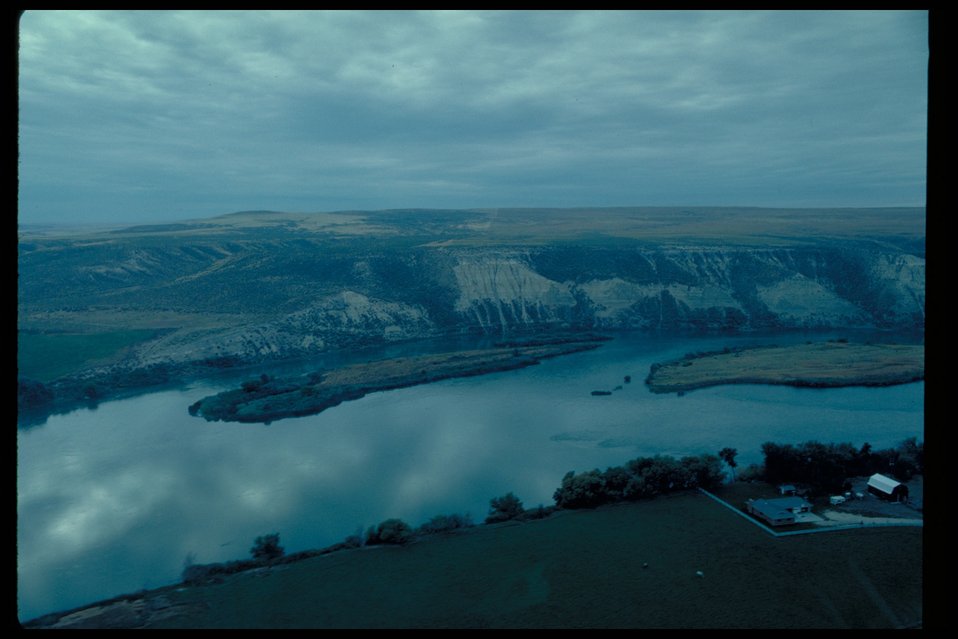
Two Island Crossing near Glenns Ferry Oregon Trail Lower Snake River District